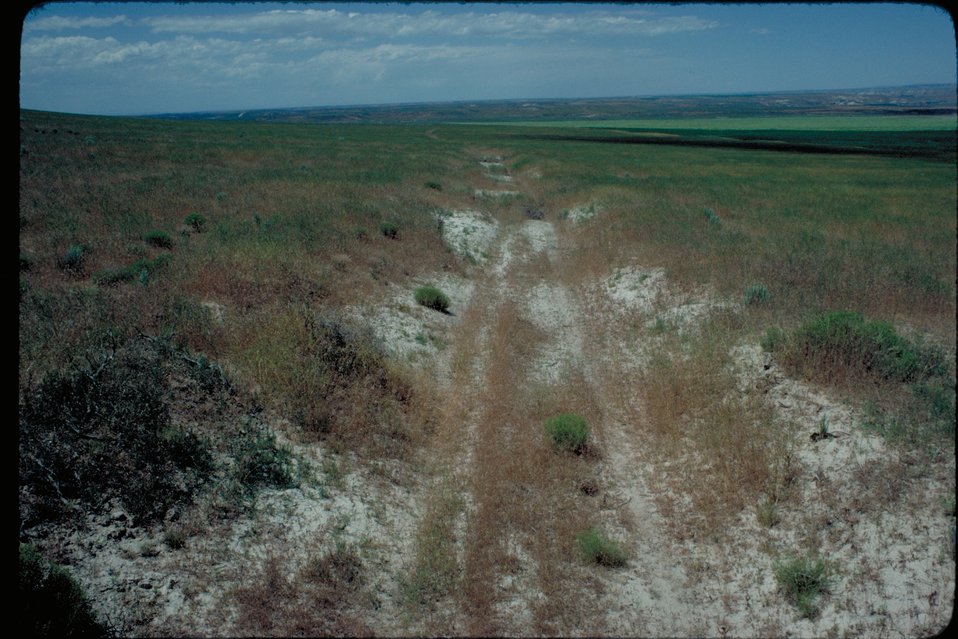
Oregon Trail west of Cassia Gulch Cultural resource Historic area LSRD Lower Snake River District